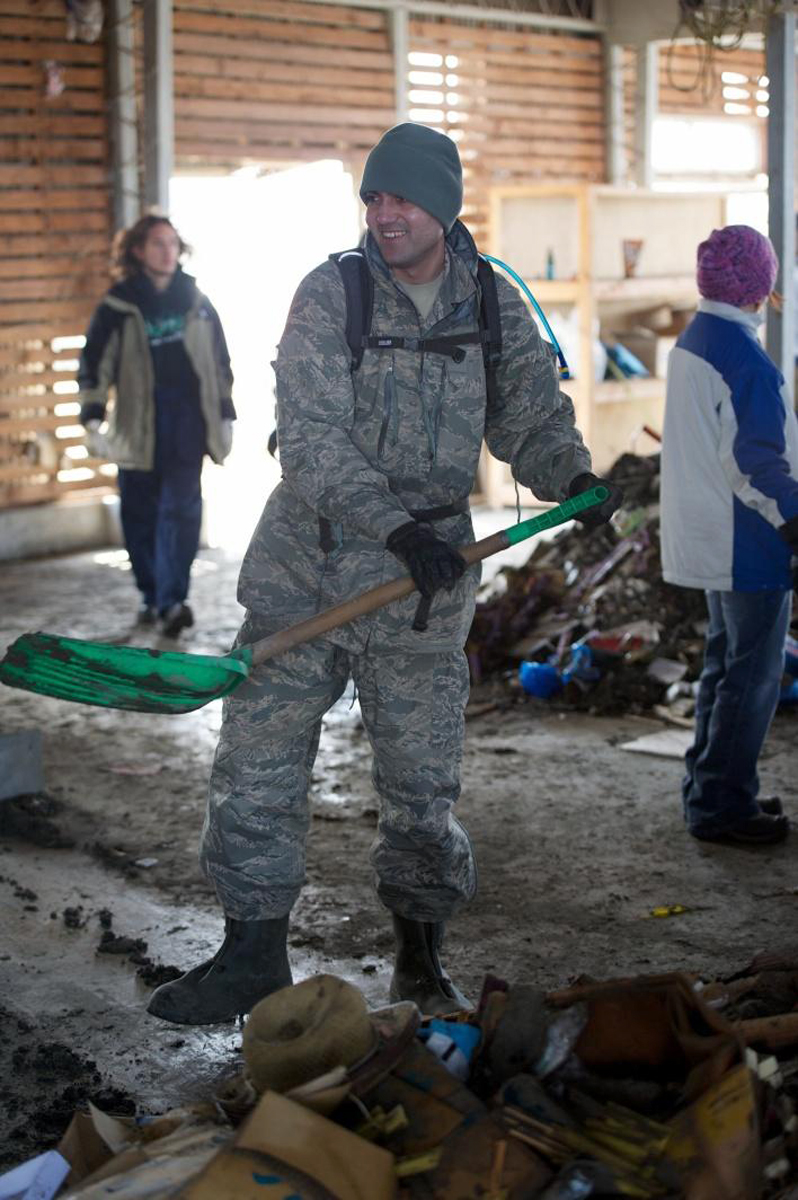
Misawa Air Base Personnel and Family Members help Tsunami-Battered Japanese City

U.S. Air Force Staff Sgt. Alexis Cintron from Mayaguev, Puerto Rico, assigned to 373rd Support Squadron at Misawa Air Base, shovels debris from inside a Hachinohe warehouse. More than 50 volunteers from Misawa Air Base assisted with the cleanup here following the 9.0-magnitude earthquake that triggered a devastating tsunami on Japan's eastern coastline.